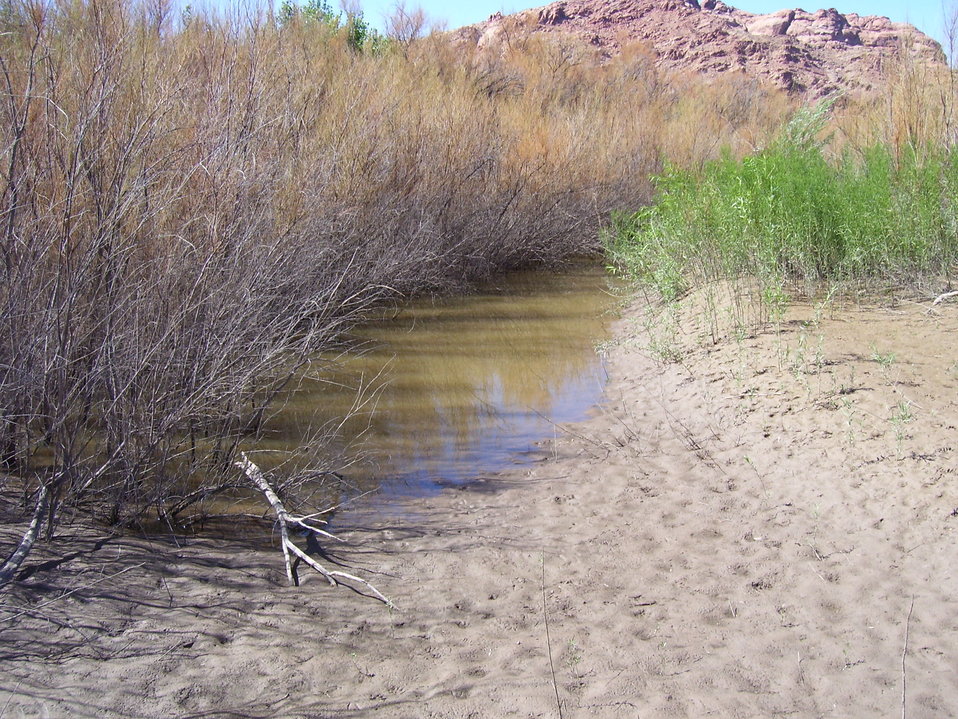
Moab Tamarisk Removal

About $23,000 from the Recovery Act funded the recent removal of invasive and nonnative tamarisk trees and planting of native plant species at the Moab site in Utah. Recovery Act workers removed a 1,700-foot-long, 35-foot-wide stretch of the trees, pictured here, along the Colorado River bank adjacent to the groundwater well field. This 1.4-acre area will be revegetated with native plant species to improve aesthetics and encourage wildlife.